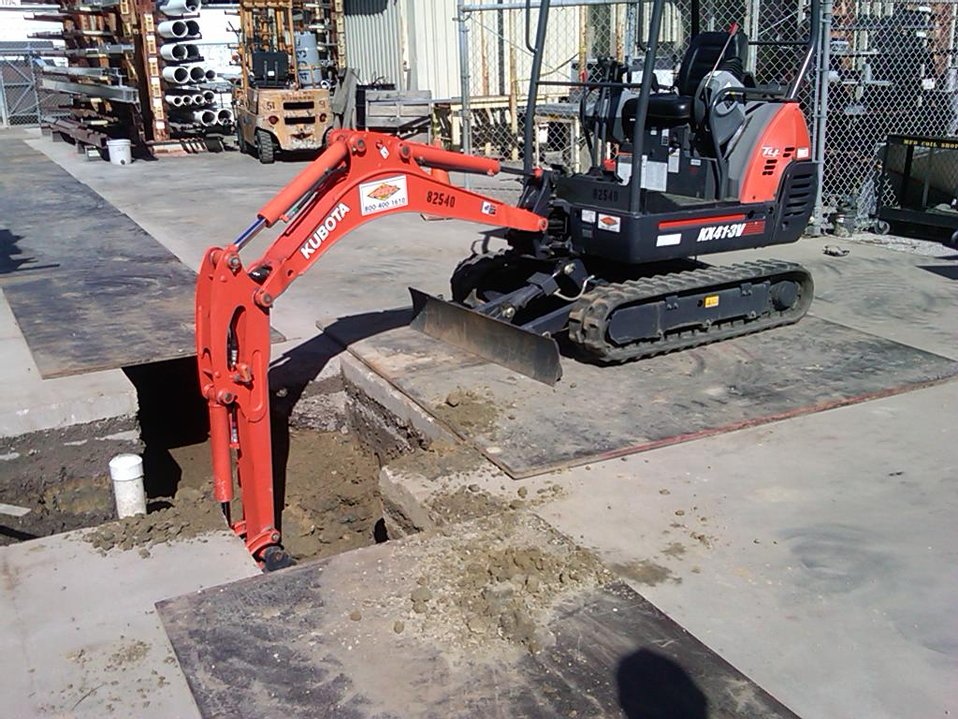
Recovery Act Supports Soil and Debris Cleanup, Groundwater Treatment at SLAC

Recovery Act workers are on track to remove more than 30,000 cubic yards of contaminated soil and debris at the SLAC National Accelerator Laboratory by September 2011.
The Recovery Act invested $14.3 million in legacy cleanup activities at SLAC. In addition to removing contaminated soil and debris that is shipped to local disposal facilities, Recovery Act workers installed three new groundwater treatment systems.